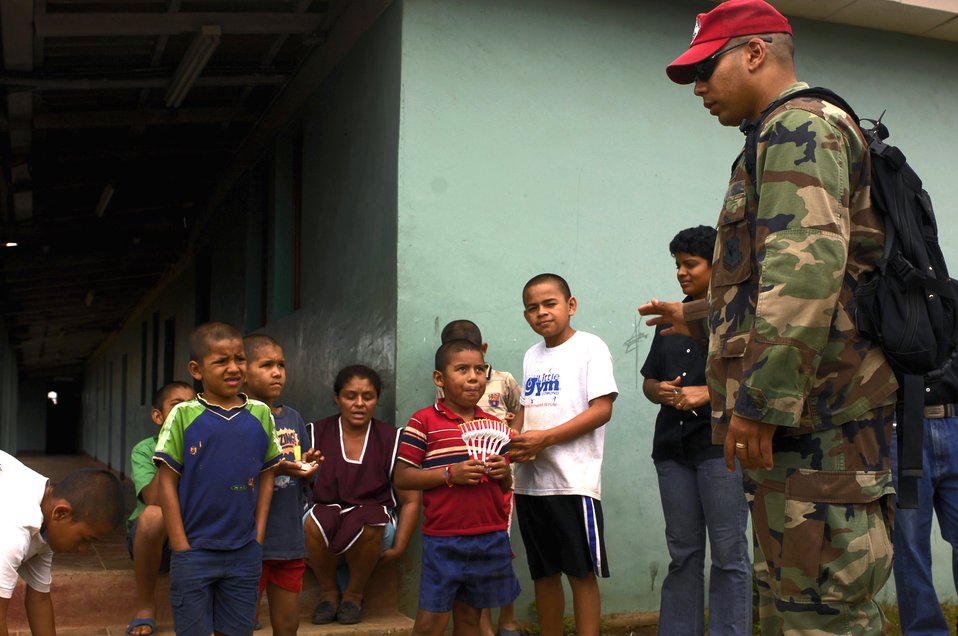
New Horizons-Nicaragua 2007 provides aid, strengthens bonds

Capt. Carlos Diaz says goodbye after he and two other Airmen delivered food to the ABC Feed the Children Orphanage, near San Taresa, Nicaragua. Captain Diaz is a public affairs officer participating in New Horizons-Nicaragua 2007, a $7.25 million joint U.S. and Nicaraguan military humanitarian and training exercise that will provide a new school and medical clinic, as well as free health and veterinary care, giving aid and strengthening bonds between the two nations.